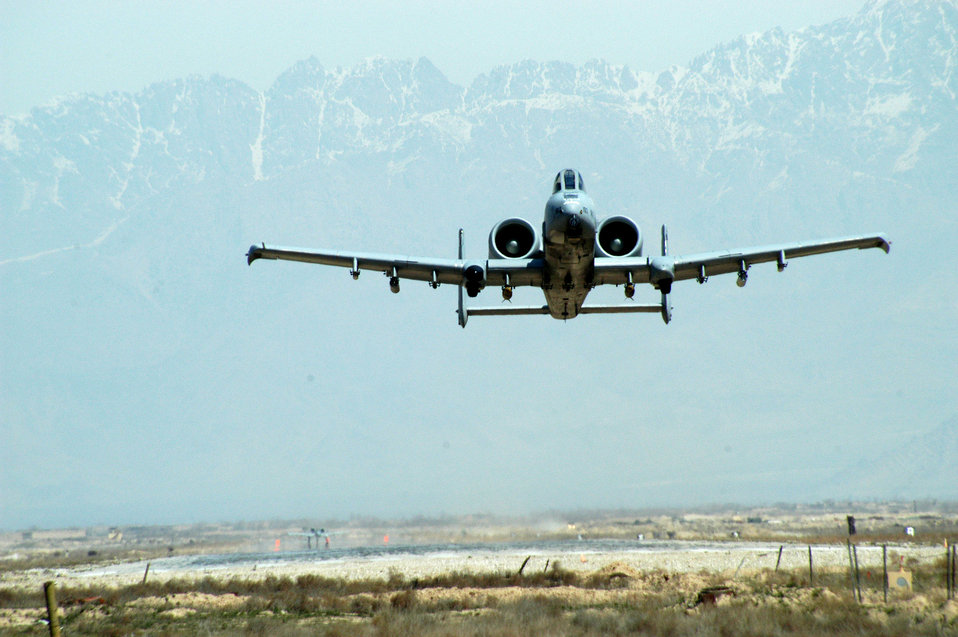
Operation Valiant Strike

1990's -- BAGRAM AIR BASE, Afghanistan -- An A-10 Thunderbolt II assigned to the 104th Expeditionary Fighter Squadron takes off March 20. Coalition forces in Afghanistan launched another offensive, dubbed Operation Valiant Strike, on March 20 aimed at villages and cave complexes east of Kandahar in the Sami Ghar mountains, defense officials said. A-10 pilots provide close air support for Army forces here.